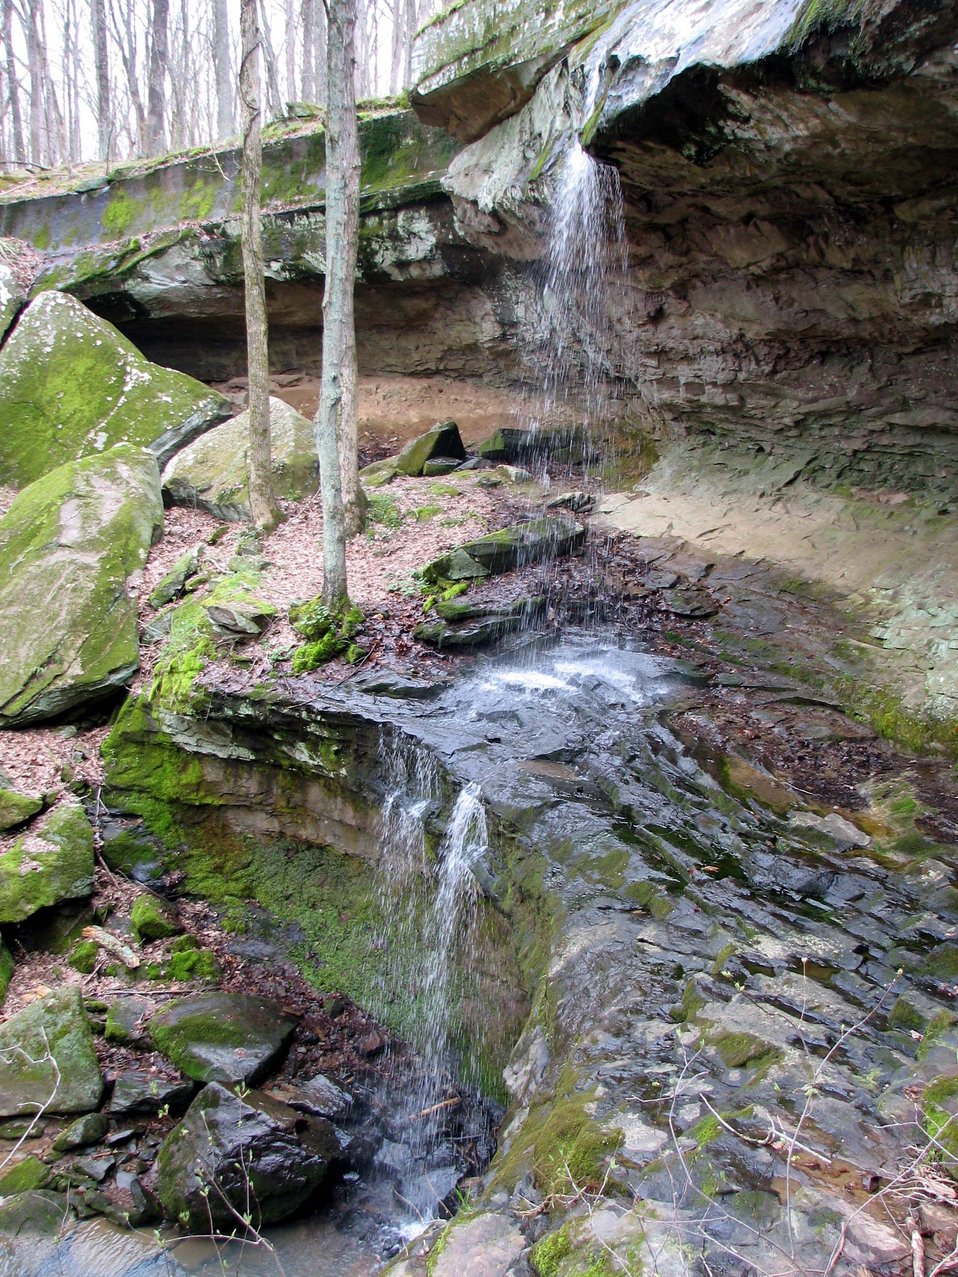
IL - Crab Orchard National Wildlife Refuge scenic